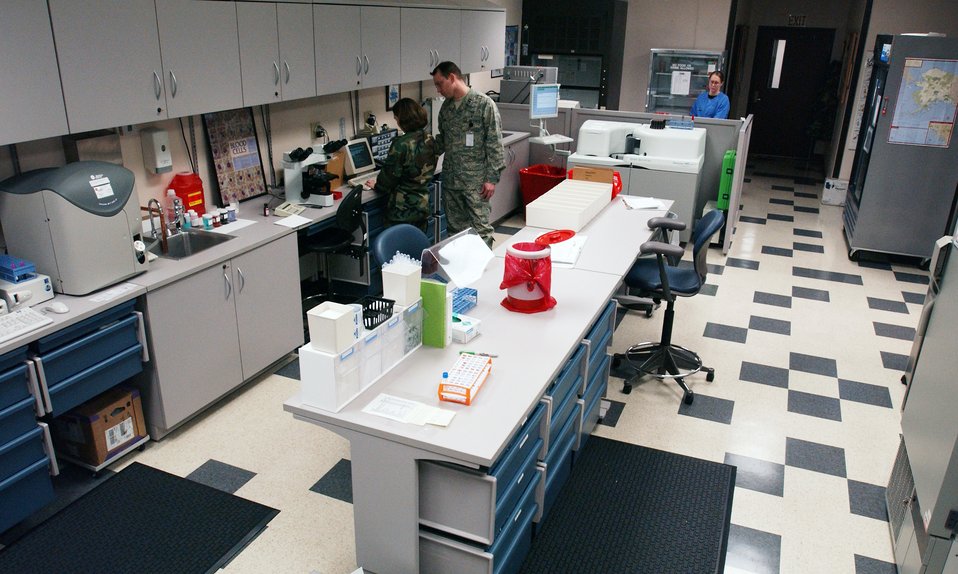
Testing samples

Laboratory technicians assigned to the 354th Medical Group at Eielson Air Force Base, Alaska collect, process, analyze and test specimens for diagnostic clinical testing in chemistry, urinalysis, hematology, microbiology and serology.